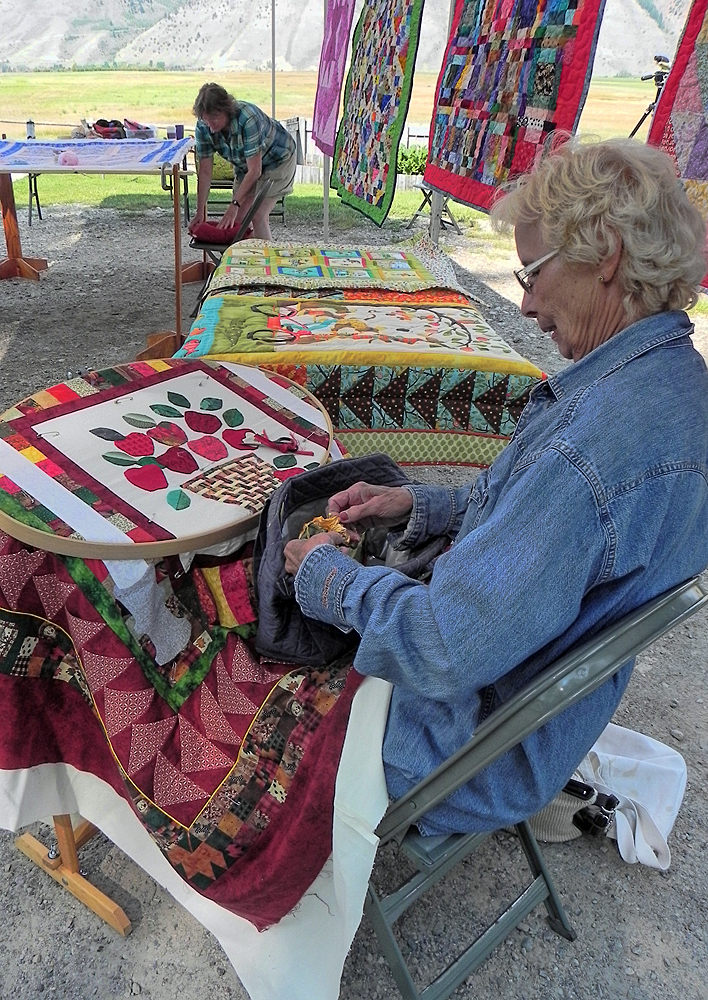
One Stitch at a Time

The Jackson Hole Quilt Guild held a quilting demonstration at the Historic Miller House during the National Elk Refuge's centennial weekend. A number of guild members stitched in front of a beautiful backdrop of quilts.

Credit: USFWS / BJ Baker, National Elk Refuge volunteer